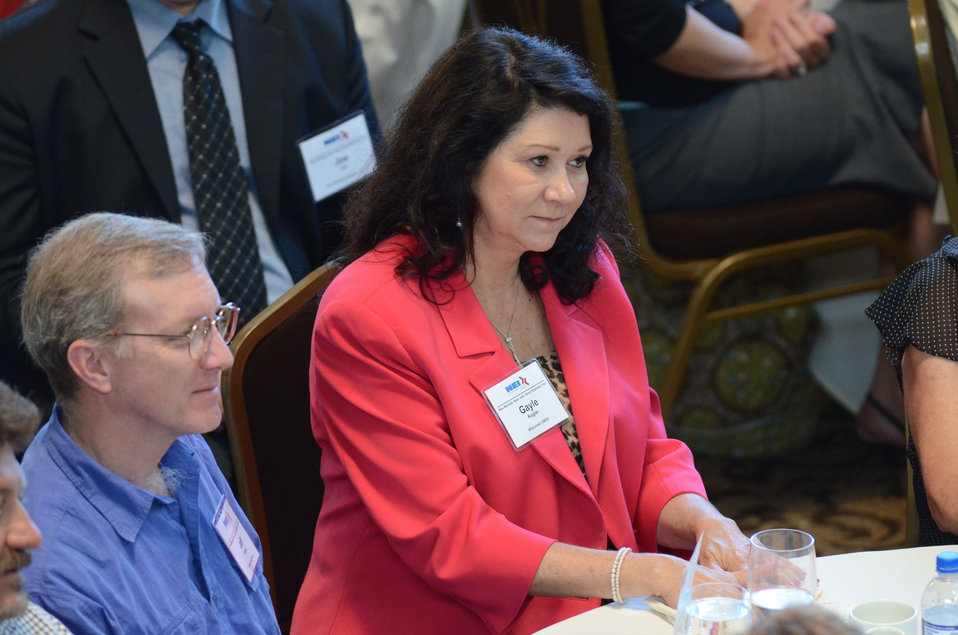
Members of the audience listen to Agriculture Secretary Tom Vilsack speak at the National Export Initiative (NEI) Small Business Tour in Milwaukee, WI, on Wednesday, August 3, 2011. An important goal of the NEI is to provide additional assistance to small and medium-sized businesses, which are major drivers of job creation. The NEI is assisting small and medium-sized businesses win more foreign government contracts, find buyers worldwide, participate in more trade missions and trade shows, receive more export financing, and learn new ways to sell products and services overseas.